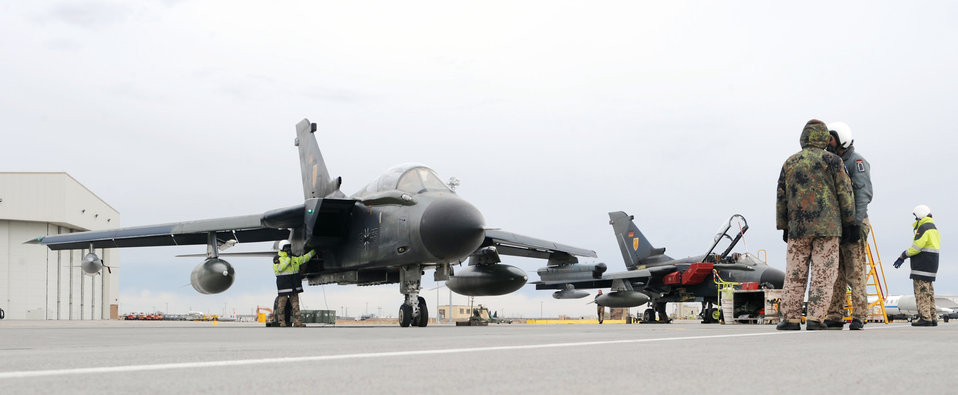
Exercise Mountain Roundup

Maintainers from the German air force Flying and Training Center at Holloman Air Force Base, N.M., stand by as a PA-200 Tornado gets ready to taxi out for a mission Oct. 21, 2009, during the Mountain Roundup exercise at Mountain Home AFB, Idaho. Mountain Roundup is a large-force exercise running Oct. 15 through Oct. 30 and includes participants from the German air force, U.S. Air Force, U.S. Navy and U.S. Marines.